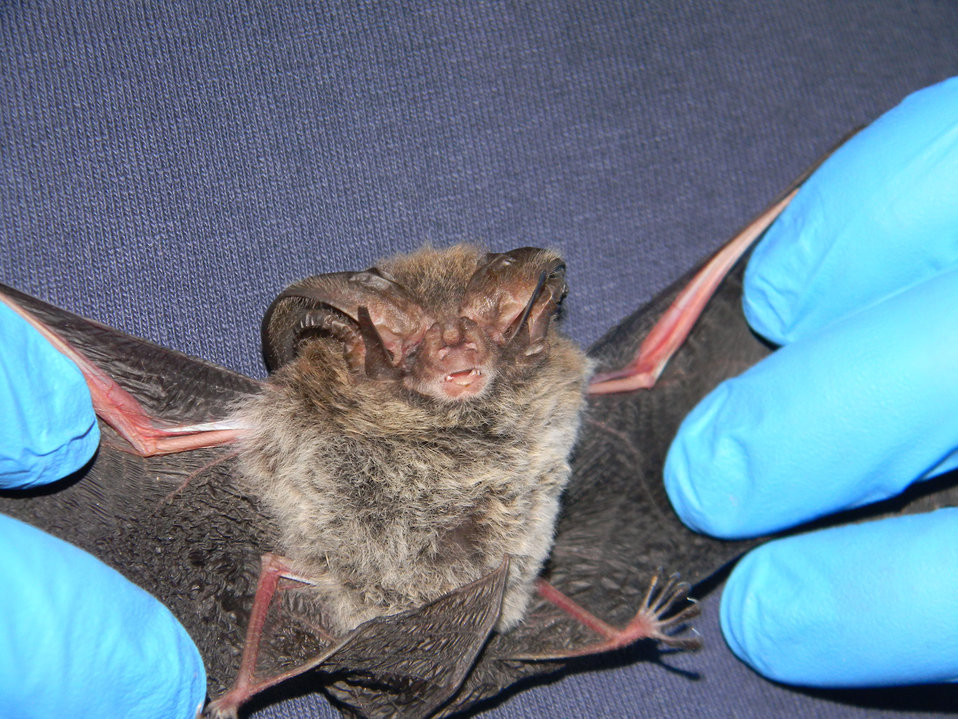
275 Rafinesque's Big-eared Bat

The Rafinesque's Big-eared Bat is one of two of its kind caught for a bat survey conducted by the U.S. Forest Service, Florida Bat Working Group, Florida Fish and Wildlife Conservation Commission and the University of Florida to test for white-nose syndrome and general bat healthiness in the Apalachicola National Forest in Florida on May 22, 2012. The Rafinesque's Big-eared Bat is listed as a sensitive species and is a rare find on the National Forests of Florida.